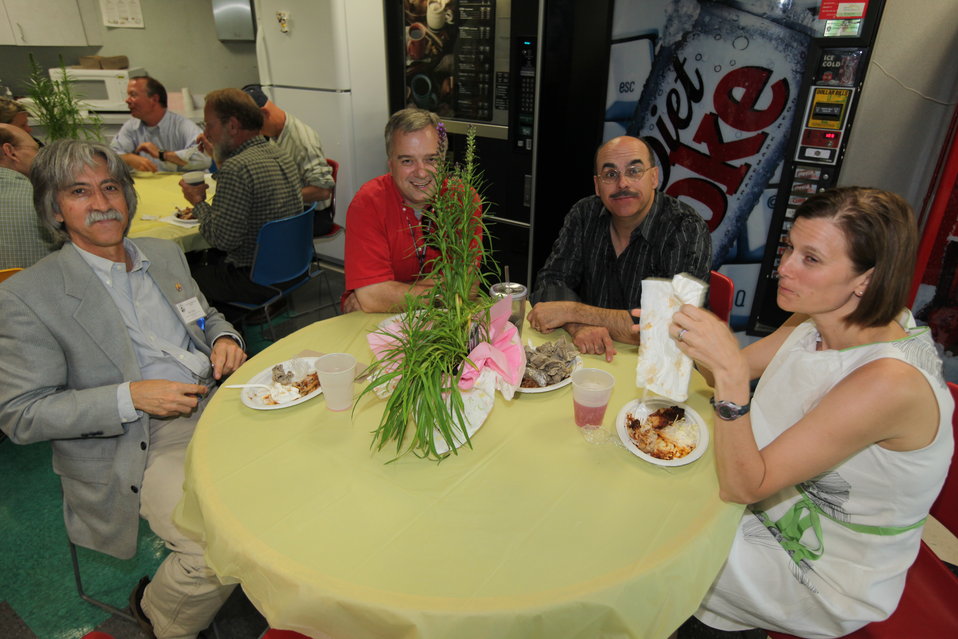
Northeast Region Employee Appreciation Awards

Luncheon